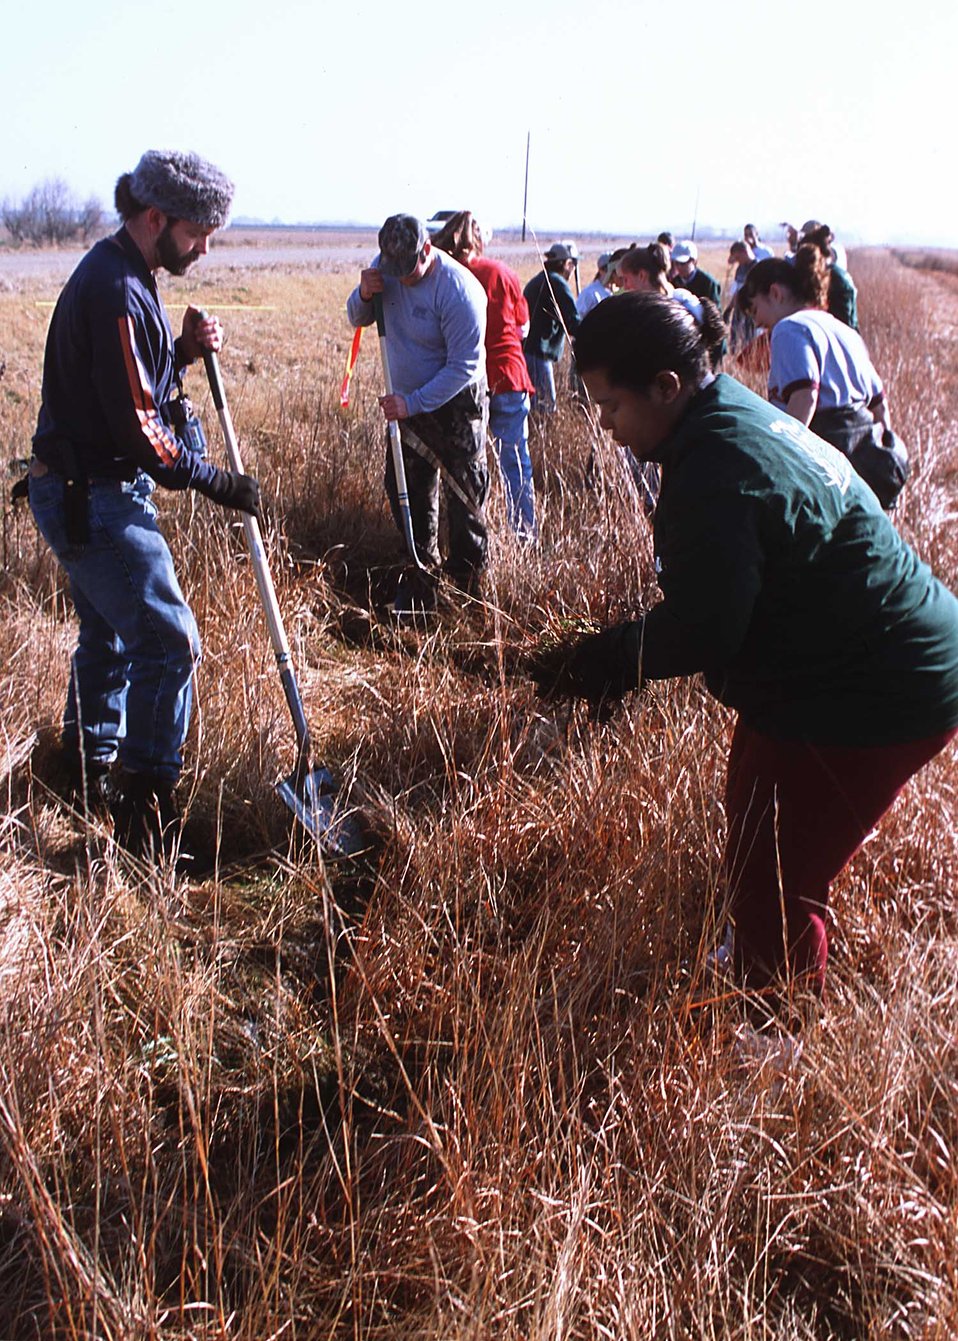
Earth team volunteers of NRCS help transplant native prairie plants from a roadside near Gueydan, Louisiana, to a restored wetland nearby.